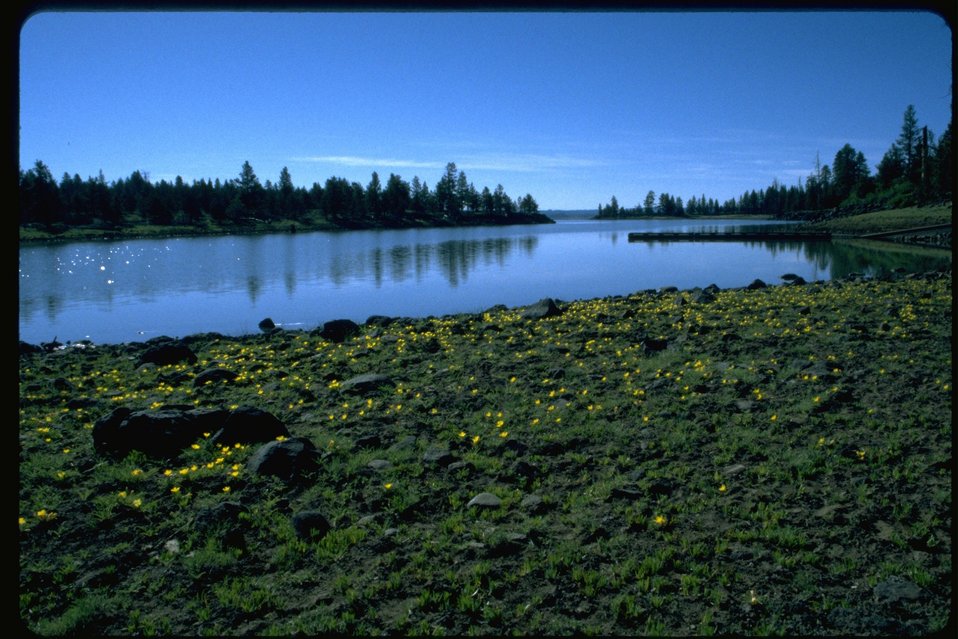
Round Valley Reservoir.